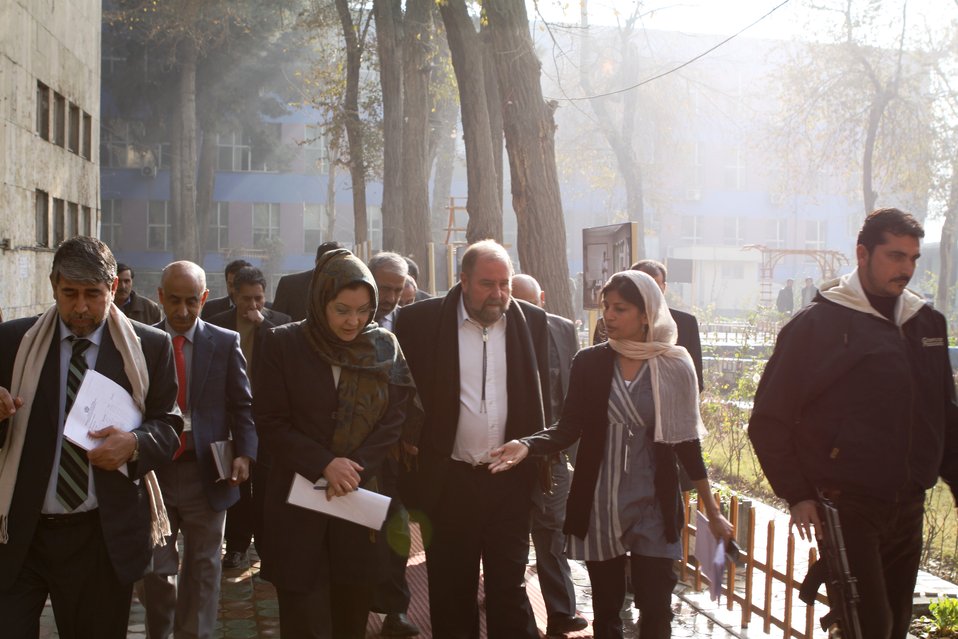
Community Health Workers Celebrated

Kabul, Afghanistan | December 5, 2010 — In support of the United Nations designated International Volunteer Day for Economic and Social Development, Afghanistan’s Ministry of Public Health celebrated its annual Community Health Worker Day today. Acting Minister of Public Health Dr. Suraya Dalil, USAID Senior Deputy Mission Director Robert Hellyer, other government officials, and international donors joined in recognizing the critical contribution of community health workers in Afghanistan and encouraging them to continue their voluntary support to their communities.
The event praised the contributions of the more than 22,000 volunteers throughout the country who deliver community level health-education, counseling, and services out of village health posts located in private homes. The Ministry of Public Health envisioned that community-based healthcare programs will actively encourage communities and families to adopt healthy lifestyles and behaviors, and provide families access to high quality and socially acceptable preventative medicine and life-saving services.
“We have 22,000 community health workers in Afghanistan that are able to implement the basic and standard medicines. They all have been trained through a job description,” said Minister Dalil. Addressing the health workers, she added, “I am proud and feel powerful that I have people like you.”
USAID-funded health projects collaborate closely with the Ministry of Public Health to improve the health and nutritional status of Afghans, provide quality primary healthcare, and promote healthy behaviors at the community and household-levels. USAID supported the training of more than 9,000 of the volunteer community health workers currently working in Afghanistan.
“On behalf of the American people, I congratulate the Community Health Workers for their diligence to gain the skills and knowledge necessary to serve their communities in this important role,” said USAID Senior Deputy Mission Director Hellyer. “USAID strongly supports community based health care and believes that quality community-based health services are essential to reaching Afghanistan’s Millennium Development Goals.”
To support the Basic Package of Health Services, USAID assisted in developing the community health worker training manual, helped train community health worker supervisors and master-trainers, facilitated in-service training, and produced and developed reporting tools, job aids, and education materials.